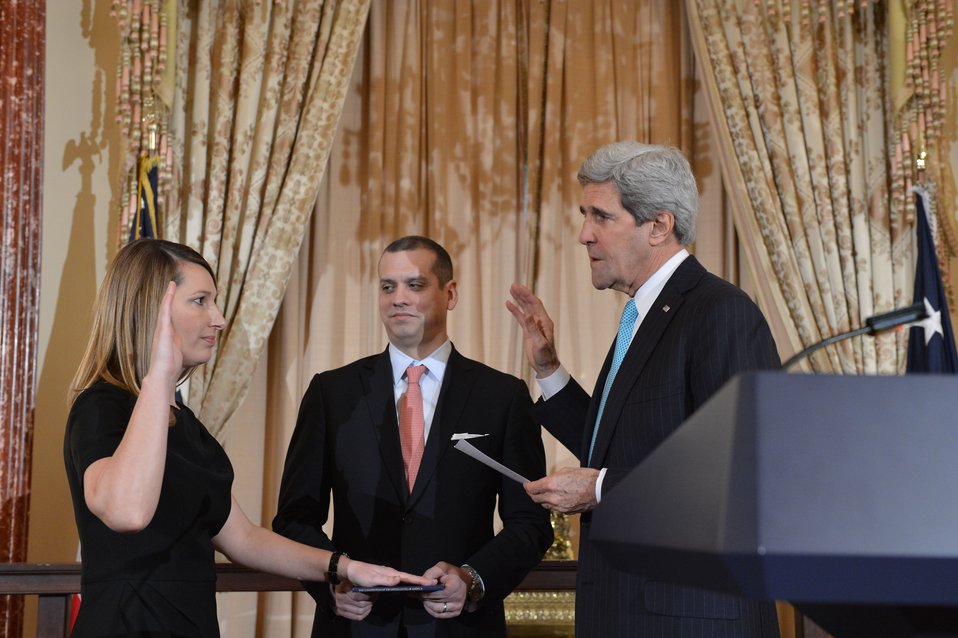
Secretary Kerry Swears in Heather Higginbottom as Deputy Secretary of State

U.S. Secretary of State John Kerry swears in Heather Higginbottom as the Deputy Secretary of State for Management and Resources, at the U.S. Department of State in Washington, D.C., on January 30, 2014.